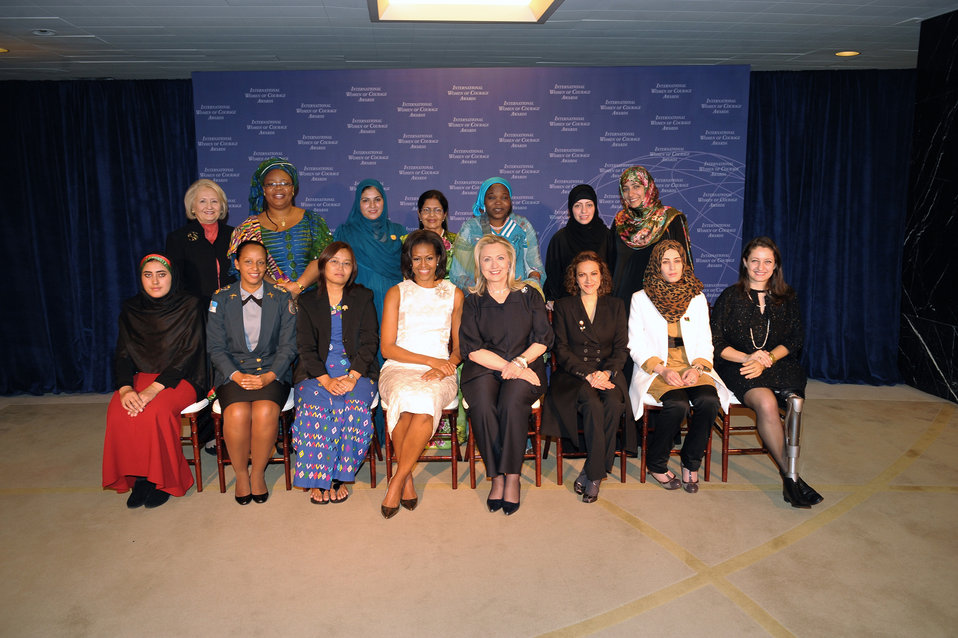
Secretary Clinton and First Lady Obama With 2012 IWOC Award Winners

U.S. Secretary of State Hillary Rodham Clinton, front row center right; and First Lady Michelle Obama, front row center left; pose for a photo with the 2012 International Women of Courage (IWOC) Award Winners at the U.S. Department of State in Washington, D.C., on March 8, 2012.